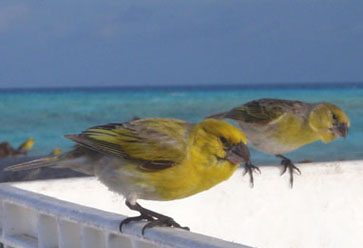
Laysan Finch - Hawaiin Islands NWR